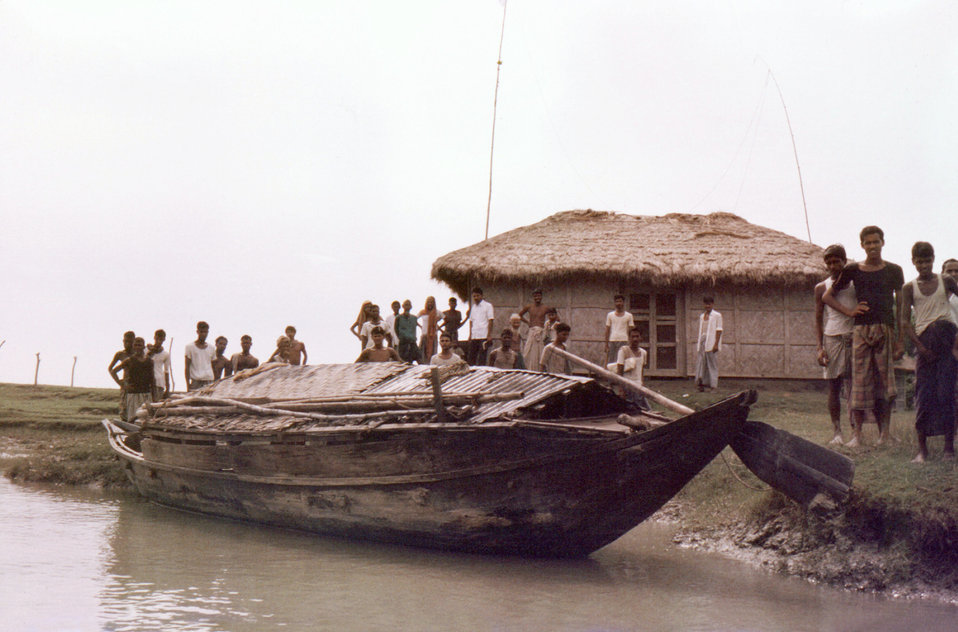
This September, 1975 photograph, depicted a beached boat in front of the 'Lord Harding Bazaar' Smallpox Office, on Bangladesh's largest island, Bhola Island.